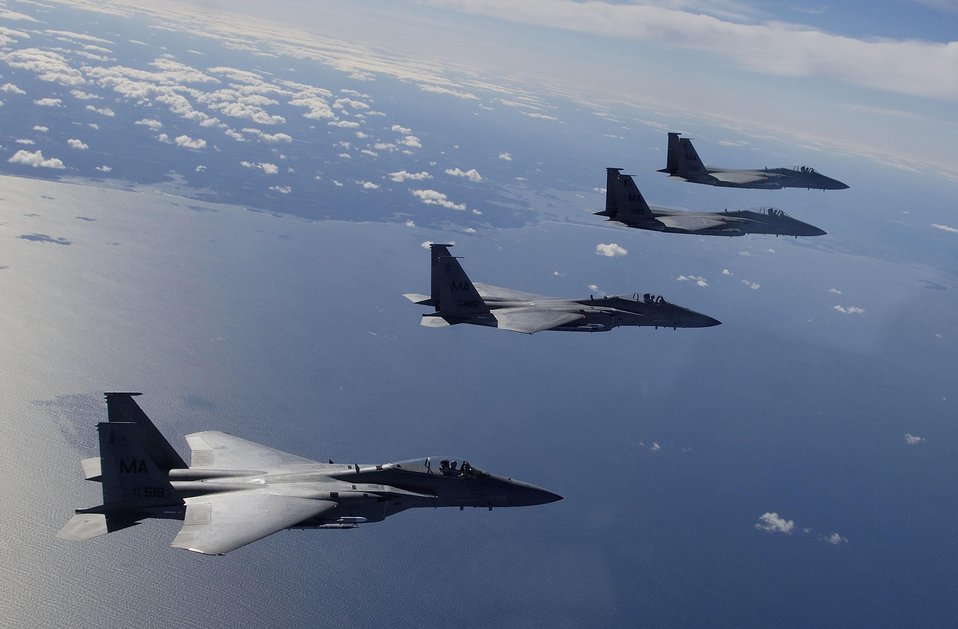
CENTAF airpower summary for Feb. 16

F-15 Eagles, like these flying over Cape Cod, are extremely maneuverable, tactical fighters designed to permit the Air Force to gain and maintain air supremacy over the battlefield.